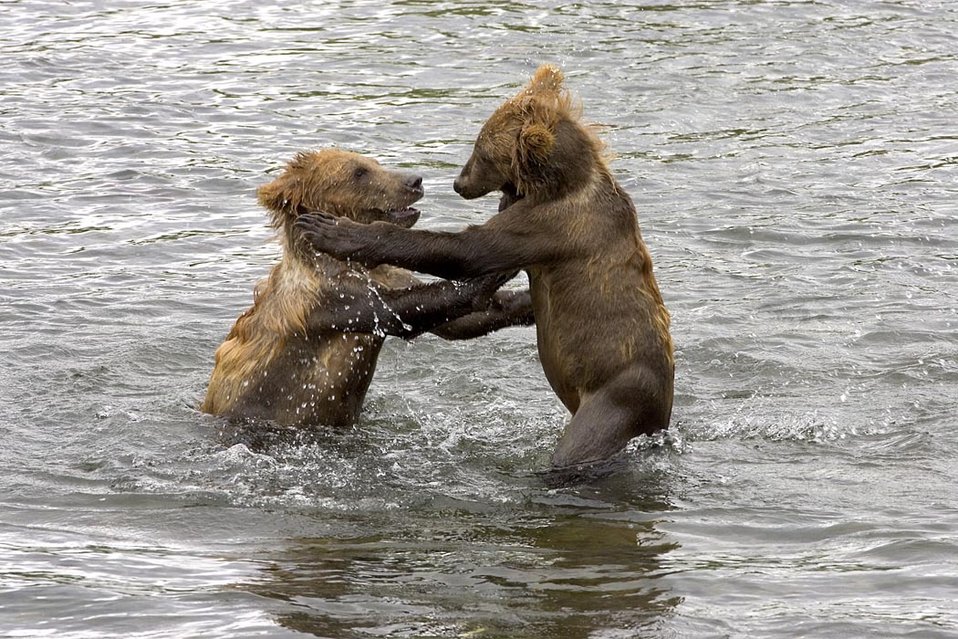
Brown bear cubs playing in water

This image taken at the Frazer Lake weir. Frazer Lake weir consists of a series of